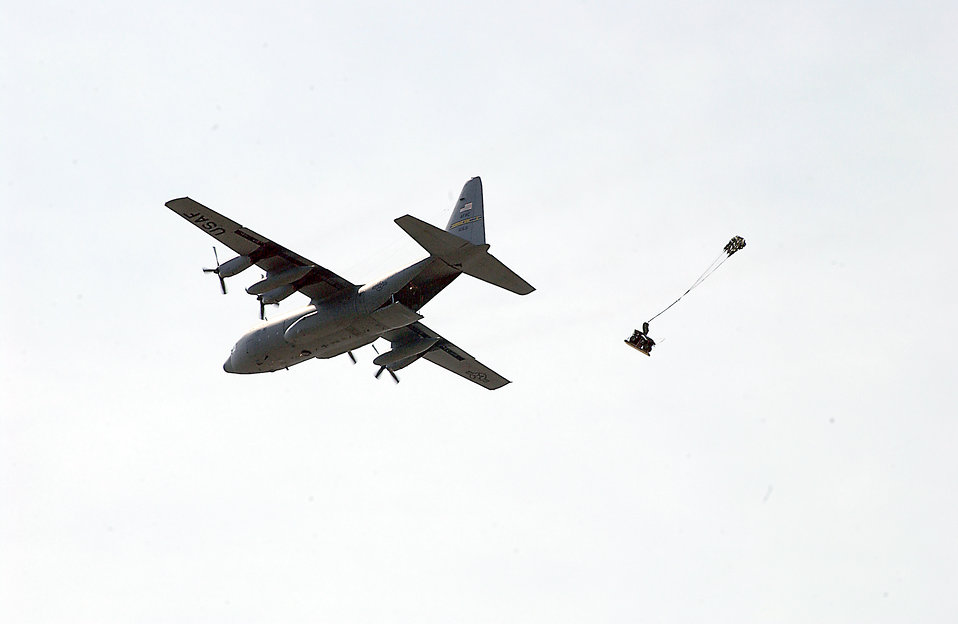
Quad drop

OVER MOODY AIR FORCE BASE, Ga. -- A Quad truck is released out of an HC-130 aircraft over the 820th Security Forces Group Drop Zone here March 21.